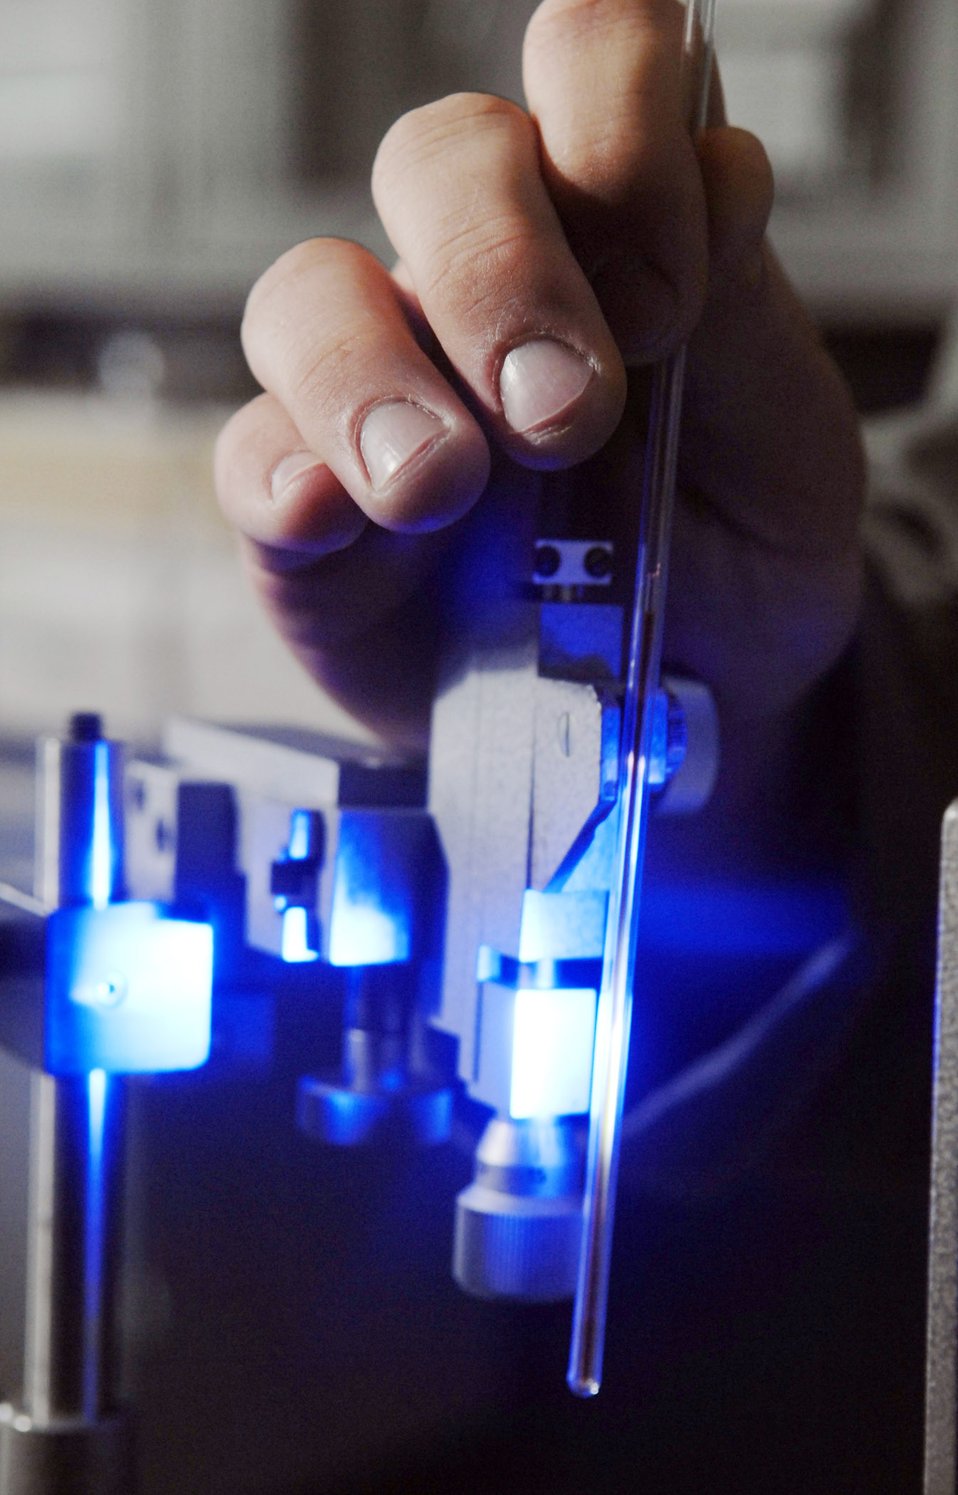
Air Force Week

Cadet Second Class Brandon McCutcheon performs an experiment using a dye to identify free radicals in hopes of one day treating chemical warfare decontamination and cancer patients at the Air Force Academy, Colorado Springs, Colo., July 10. The United States Air Force Academy offers a four-year program of instruction and experience designed to provide cadets the knowledge and character essential for leadership, and the motivation to serve as Air Force career officers. Cadet McCutcheon is majoring in Bio Chemisty and is also with the parachute demonstration team Wings of Blue.